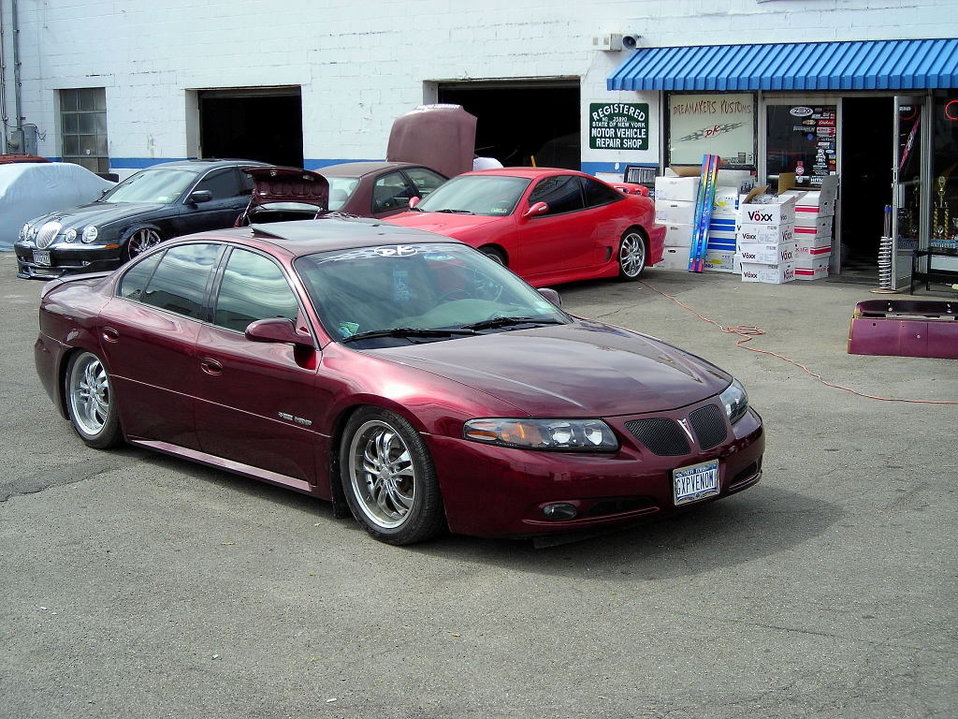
This is a 2005 Pontiac Bonneville GXP. It is highly modified. en:Category:Images of automobiles